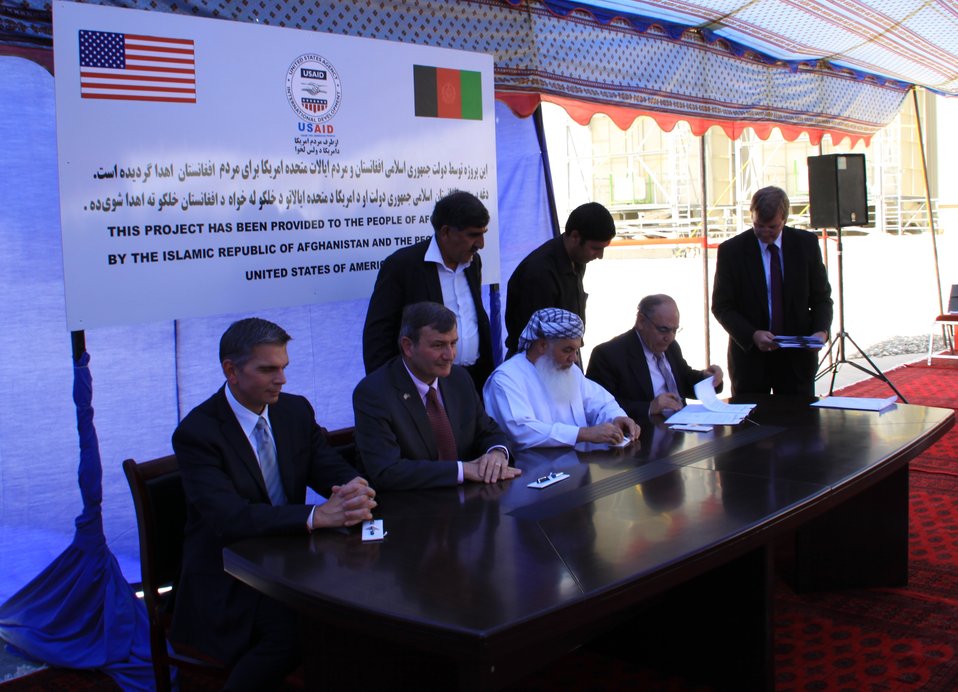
105 MW Tarakhil Power Plant Handover